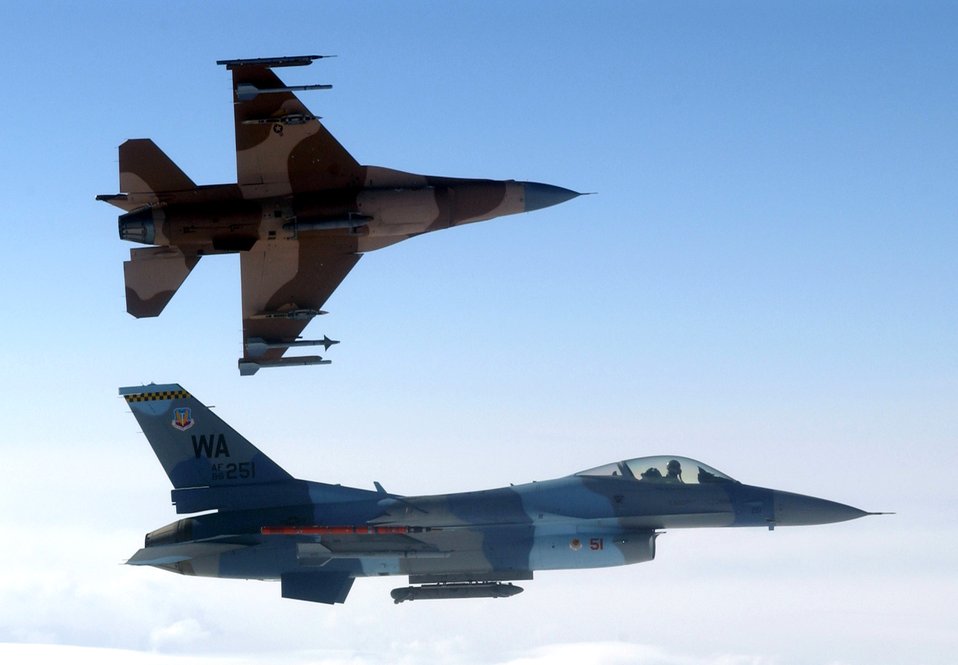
Red Flag-Alaska wraps up

Two of three Aggressor paint schemes are displayed on F-16 Fighting Falcons participating in Red Flag-Alaska at Eielson Air Force Base, Alaska, on Thursday, May 4, 2006. The F-16s are from the 64th Aggressor Squadron at Nellis AFB, Nev.